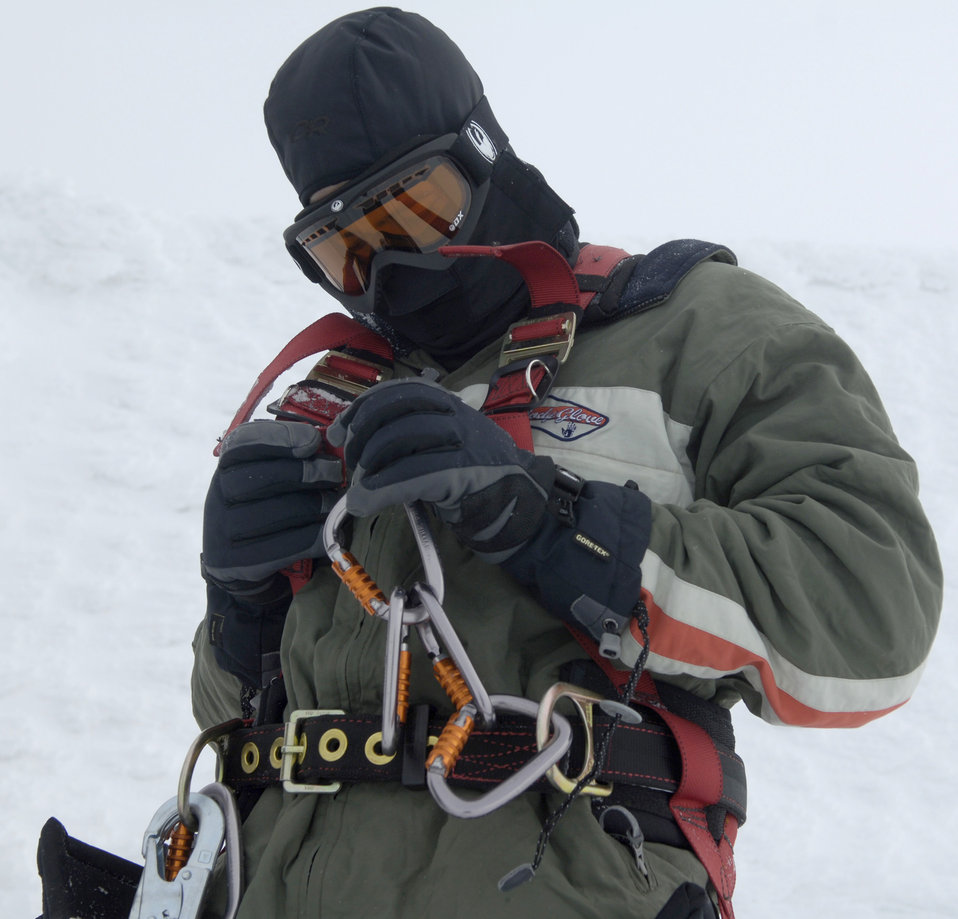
Fairchild Airmen climb ice-covered tower to retain communications

Airman 1st Class Shawn Westbrook fastens on his safety harness before climbing a radio tower Feb. 16, 2011, on the Calispell Mountain Peak in Cusick, Wash. Airman Westbrook is a transmission systems radio technician with the 92nd Communications Squadron at Fairchild Air Force Base, Wash., and is climbing the tower to knock snow and ice off of it. Doing this provides better radio communication for the 336th Training Group and local law enforcement.